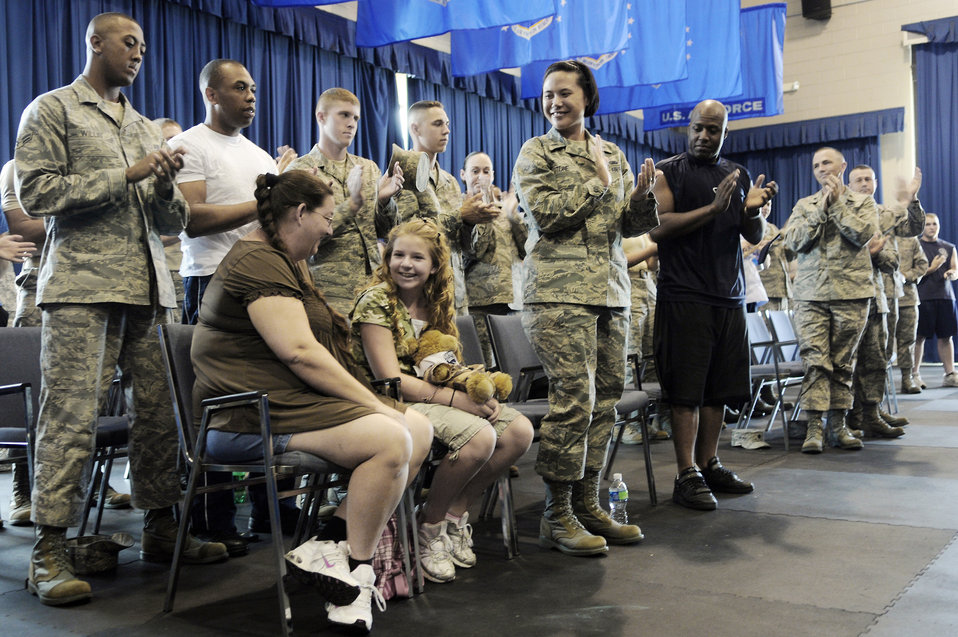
Bolling officials welcome Hero Hugs founder with open arms

Bailey Reese, founder and president of the nonprofit organization Hero Hugs, and her mother, Diana, receive a standing ovation from members of the Air Force Honor Guard and the 11th Wing July 7 at Bolling Air Force Base, D.C. Bailey first met the drill team at Dobbins Air Reserve Base, Ga., during one of the team's performances and was invited to visit the drill team at Bolling AFB.